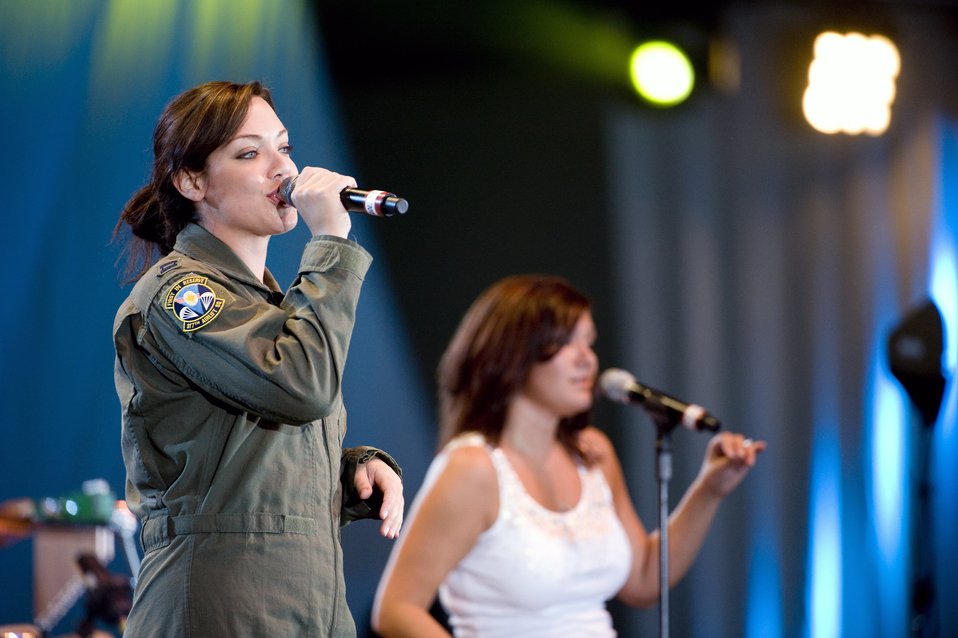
Wynonna headlines concert for military

Capt. Lyndsey Goodman performs to the military and Alaskan crowd at the Alaska's Operation Gratitude concert June 27 at Elmendorf Air Force Base, Alaska. The concert was a part of Alaska's 50 years of statehood celebration. Captain Goodman is with the 317th Airlift Squadron and was a contestant on American Idol.